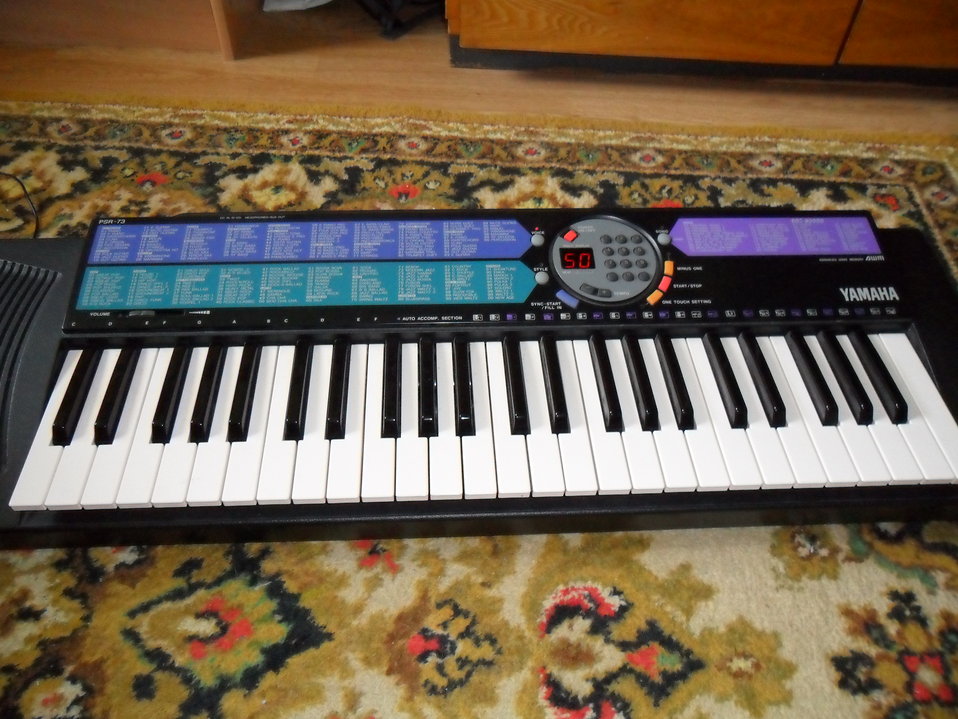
Yamaha PSR-73 electronic keyboard